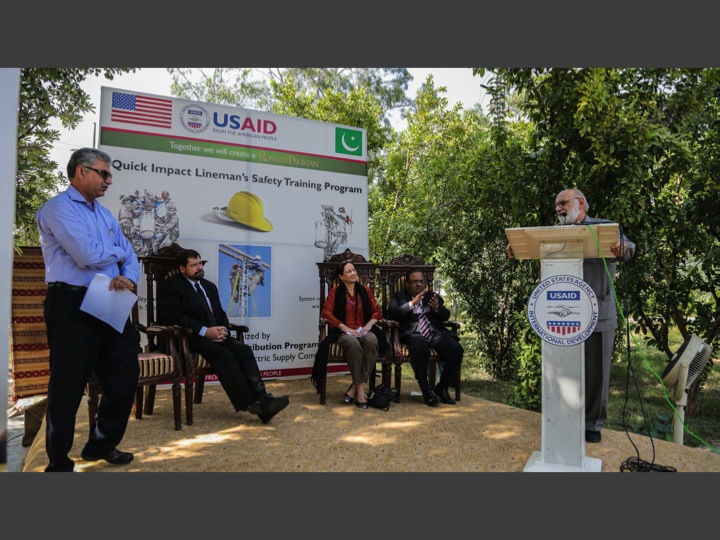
Certificate distribution ceremony